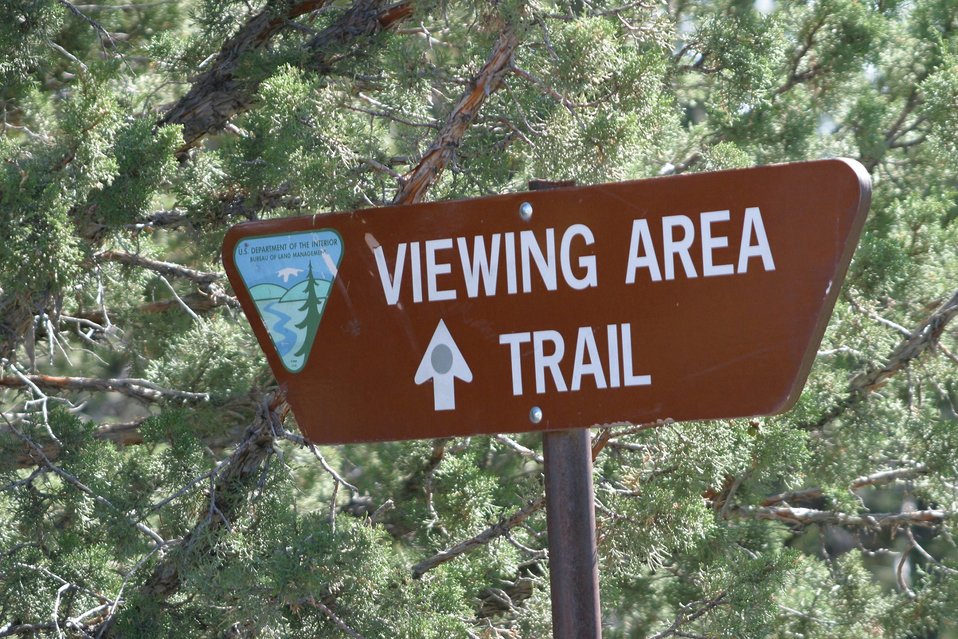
Signage at the Kiger Wild Horse Viewing Area.